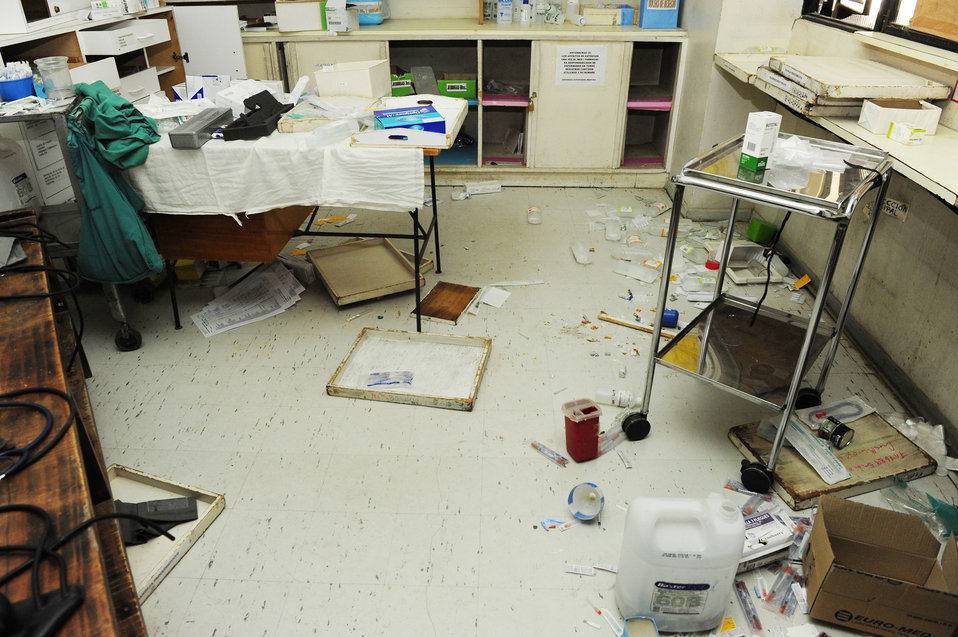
Airmen, Chileans treat patients at new expeditionary hospital

A hospital room is in disarray after Chilean medics evacuated during an 8.8-magnitude earthquake Feb. 27, 2010, in Angol, Chile. As a result of the earthquake, this regional hospital in Angol was deemed structurally unsound. Airmen from an Expeditionary Medical team along with members of the Chilean army built a mobile hospital here March 10 through 13 to meet the medical needs of the local community.